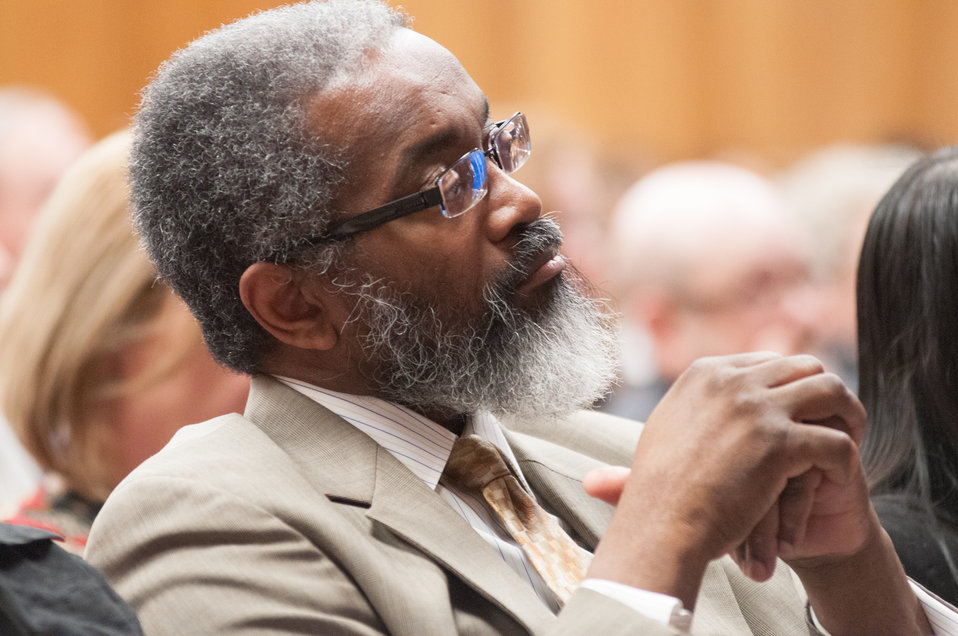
U.S. Department of Agriculture (USDA) Acting Assistant Secretary for Administration, Dr. Gregory Parham, listen to the speakers, during the 2013 Women’s History Month Observance event, “Women Inspiring Innovation Through Imagination: Celebrating Women in Science, Technology, Engineering, and Mathematics, on Thursday, March 21, 2013, in Washington, D.C. The keynote speaker is American Association of University Women Executive Director and CEO Linda Hallman. Additional remarks were made by Agriculture Deputy Secretary Dr. Kathleen Merrigan; Rural Development Acting Deputy Under Secretary Judith Canales; Administration Deputy Assistant Secretary Deputy Assistant Secretary Robin Heard; and Agriculture Research Service National Programs Associate Administrator Dr. Chavonda Jacobs-Young.